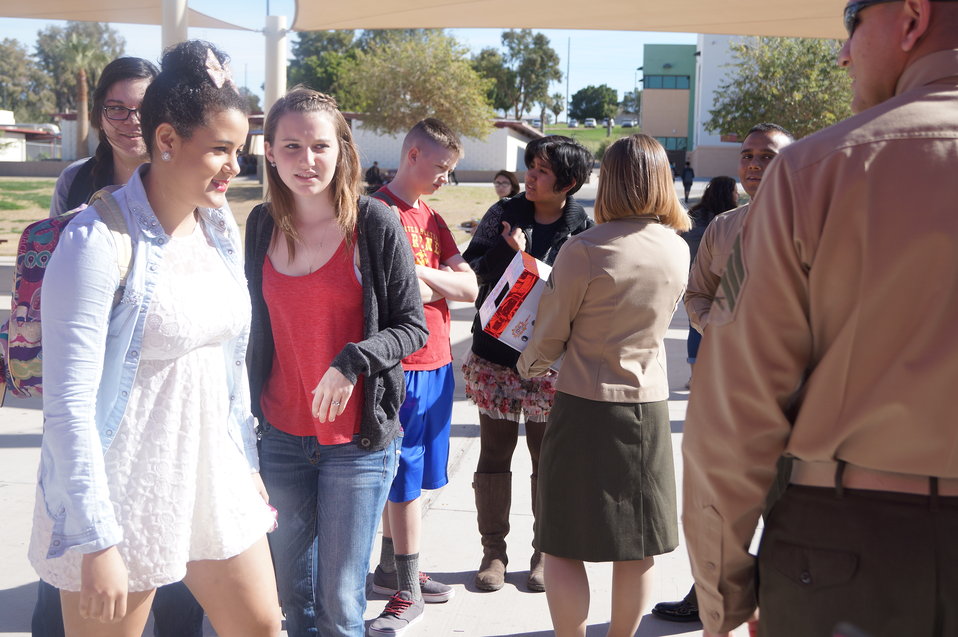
Nationa Drug Facts Week - KOFA HS

The Drug Demand Reduction Program out of Yuma Arizona held numerous events at local schools to support NIDA's National Drug Facts Week, Jan. 27-Feb. 2 2014. Teens participated in drug awareness games, and helped to Shatter the Myths about teen substance abuse.